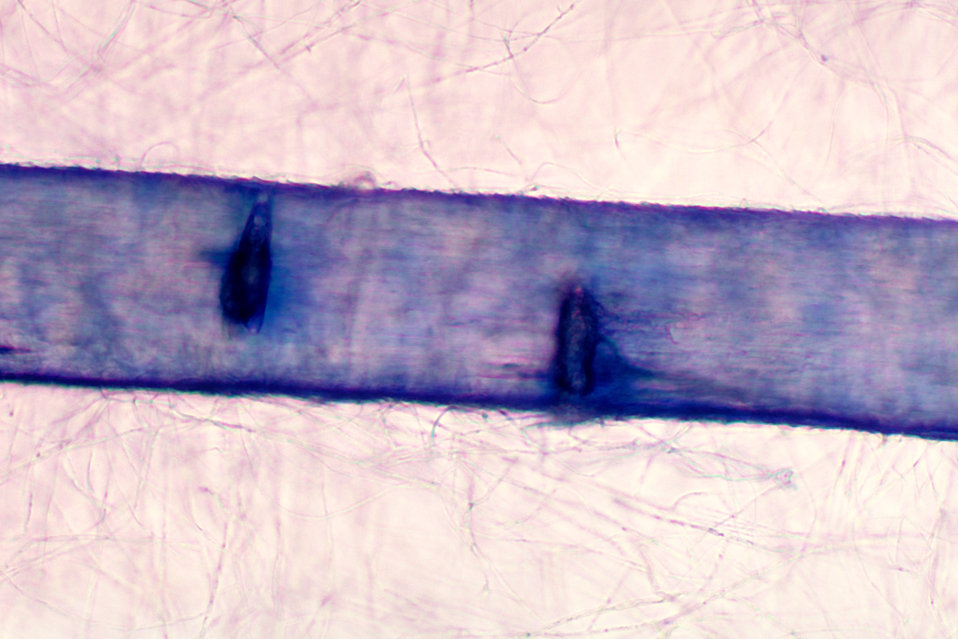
This micrograph reveals the hair perforation caused by the fungus Arthroderma otae, formerly Nannizzia otae.